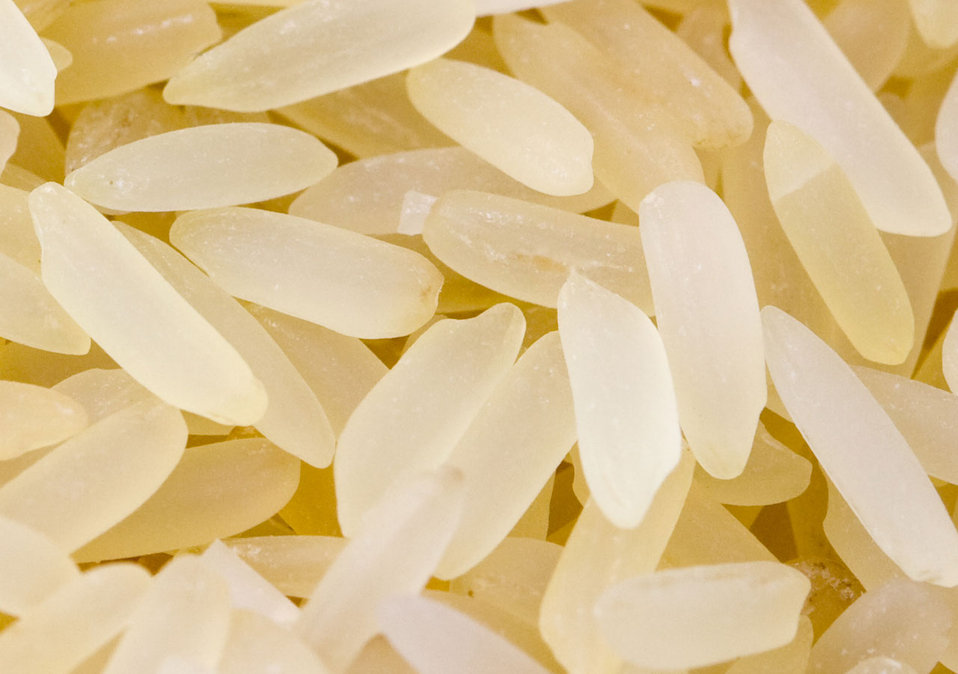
Rice

A macro photo of rice.